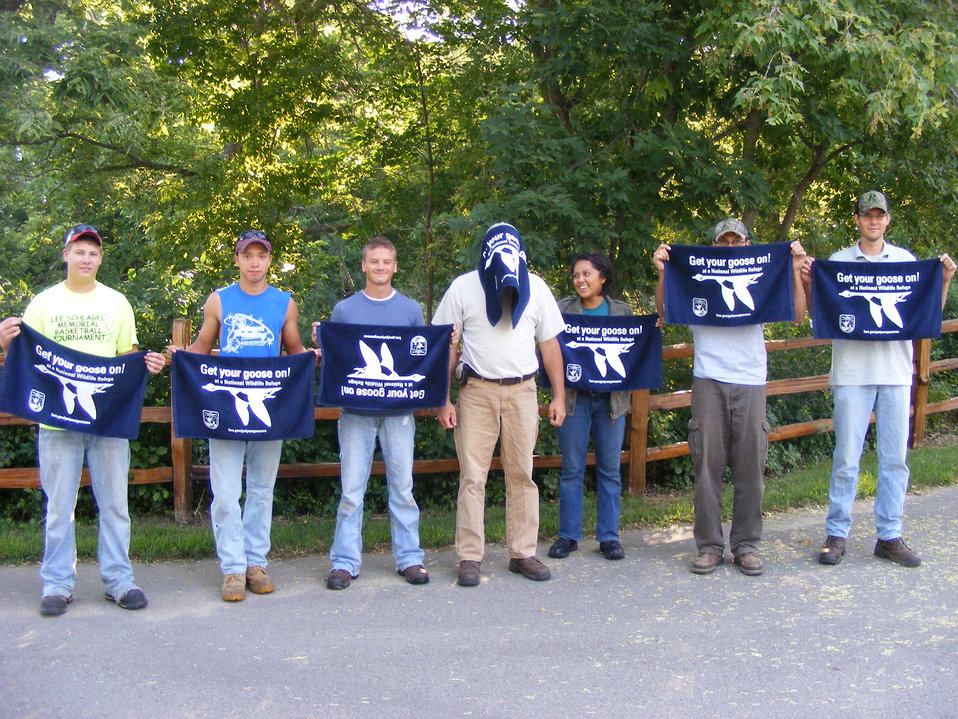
Get Your Goose On!

Gettin' weird at Waubay National Wildlife Refuge in South Dakota.